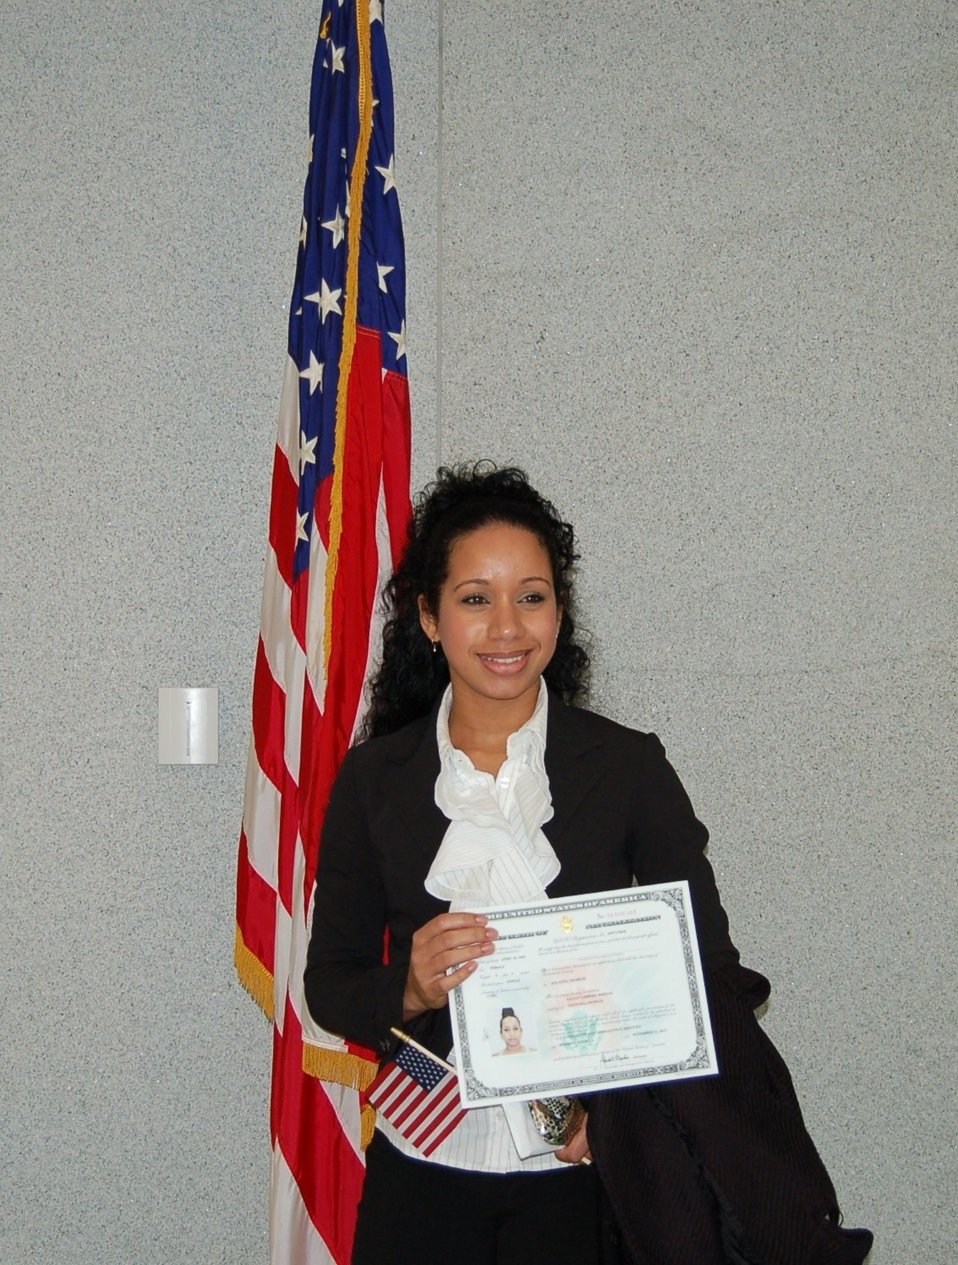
New Citizens